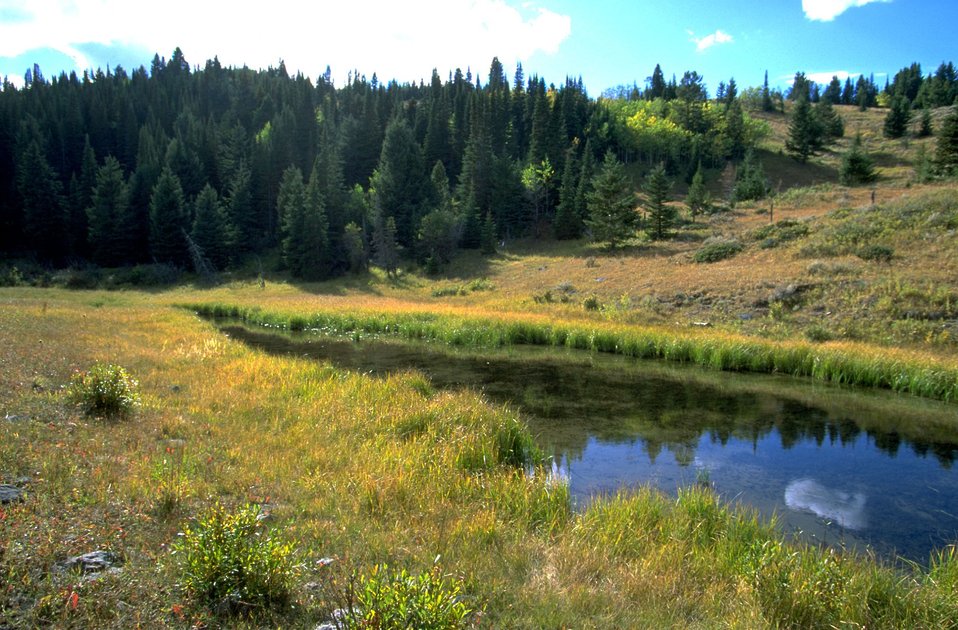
Wetlands near Reservoir Lake